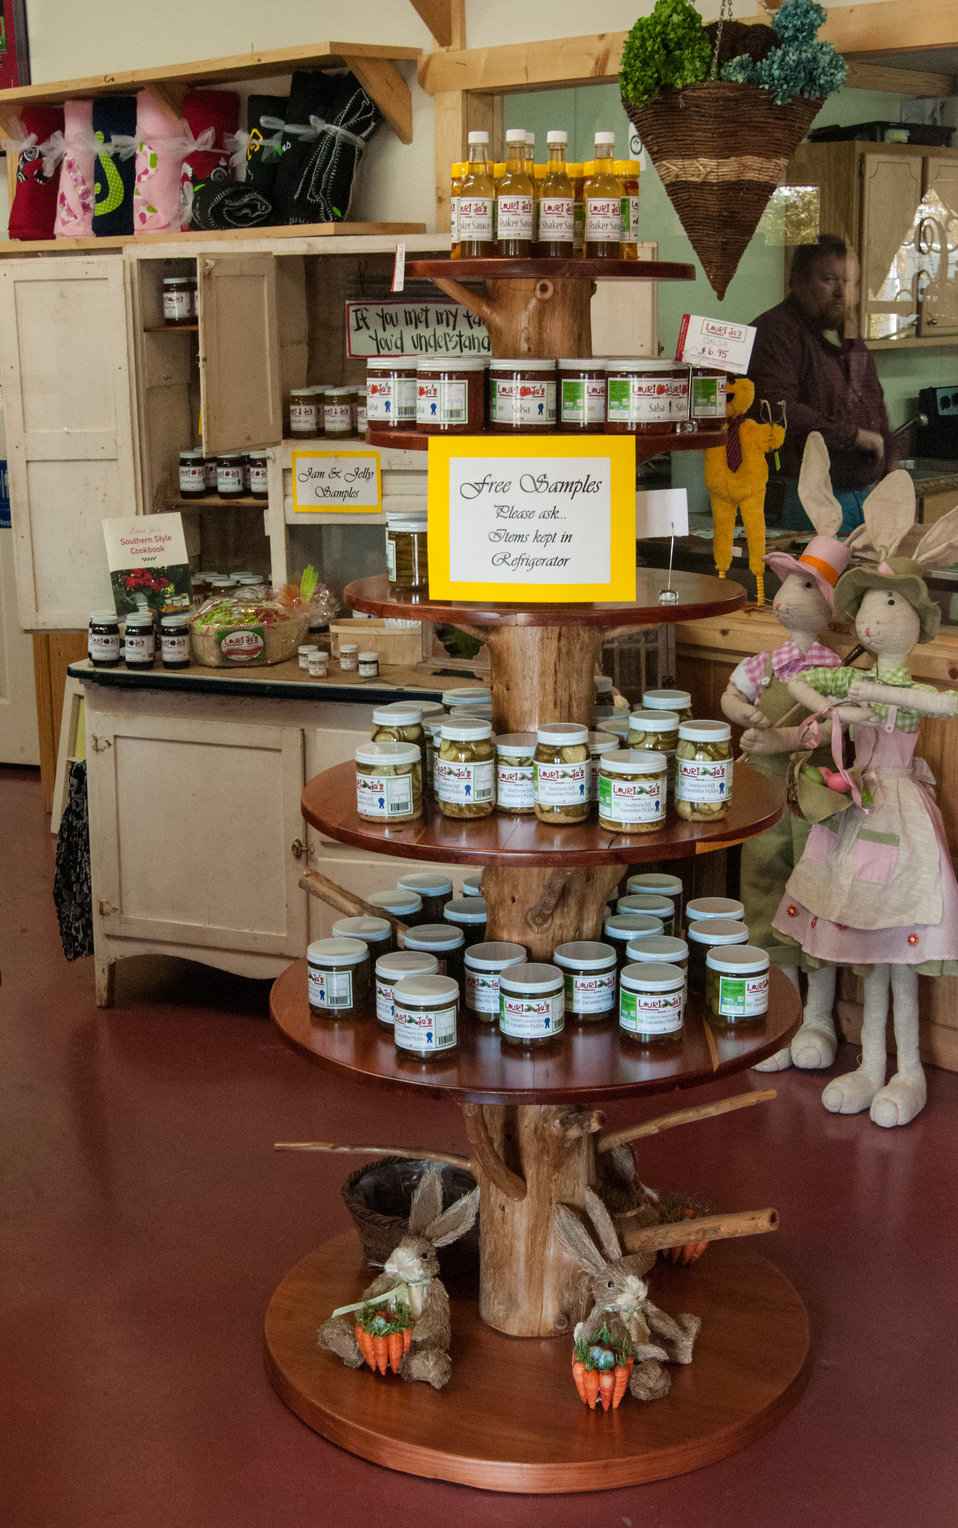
Laurie Jo’s Southern Style store sells a variety of merchandise along with her canned produce in Norman Park, Colquitt County, GA on Mar. 7, 2013. The canning business has increased its production to 12 items that now includes pickled green tomatoes, pickled okra, pickled asparagus pickled green beans, red and green pepper jellies, pineapple pepper jelly salsa and pepper sauce. Consumers may now purchase Lauri Jo’s Southern Style Canning Line in Whole Foods, Earth Fare and Kroger stores across 20 states. Lauri Jo Bennett applied for a U.S. Department of Agriculture (USDA) Rural Development (RD) Rural Business Enterprise Grant (RBEG) to help market her products. The grant from USDA has enable Lauri Jo to employ 26 people. The USDA Strike Force Initiative has designated Colquitt County, GA as a Strike Force county selected to receive assistance to relieve persistent poverty in historically high-poverty counties.